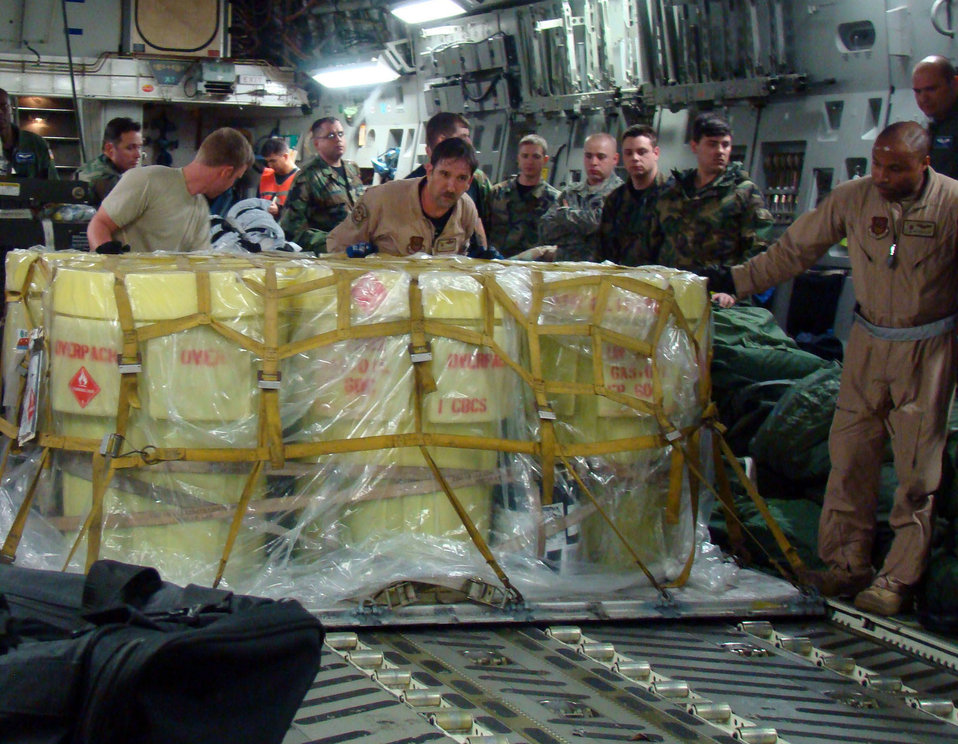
Multiservice team provides presidential support in Africa

Passengers clear a path as Tech. Sgt. Lee Fletcher (left) assists Tech. Sgt. Fred Fox guide a pallet toward the cargo ramp of a C-17 Globemaster III Feb. 12 at Ramstein Air Base, Germany. The crew transported the cargo and passengers from Ramstein AB to Accra, Ghana, in support of President George Bush's visit to the West African country. Members of the Air Force, Army, Navy and Marine Corps are deploying to Africa to provide forward operating support for President Bush's visit to the continent. Sergeant Fletcher is an aerial porter with the 819th Global Support Squadron from McGuire Air Force Base, N.J., and Sergeant Fox is a loadmaster from the 437th Airlift Wing from Charleston AFB, S.C.